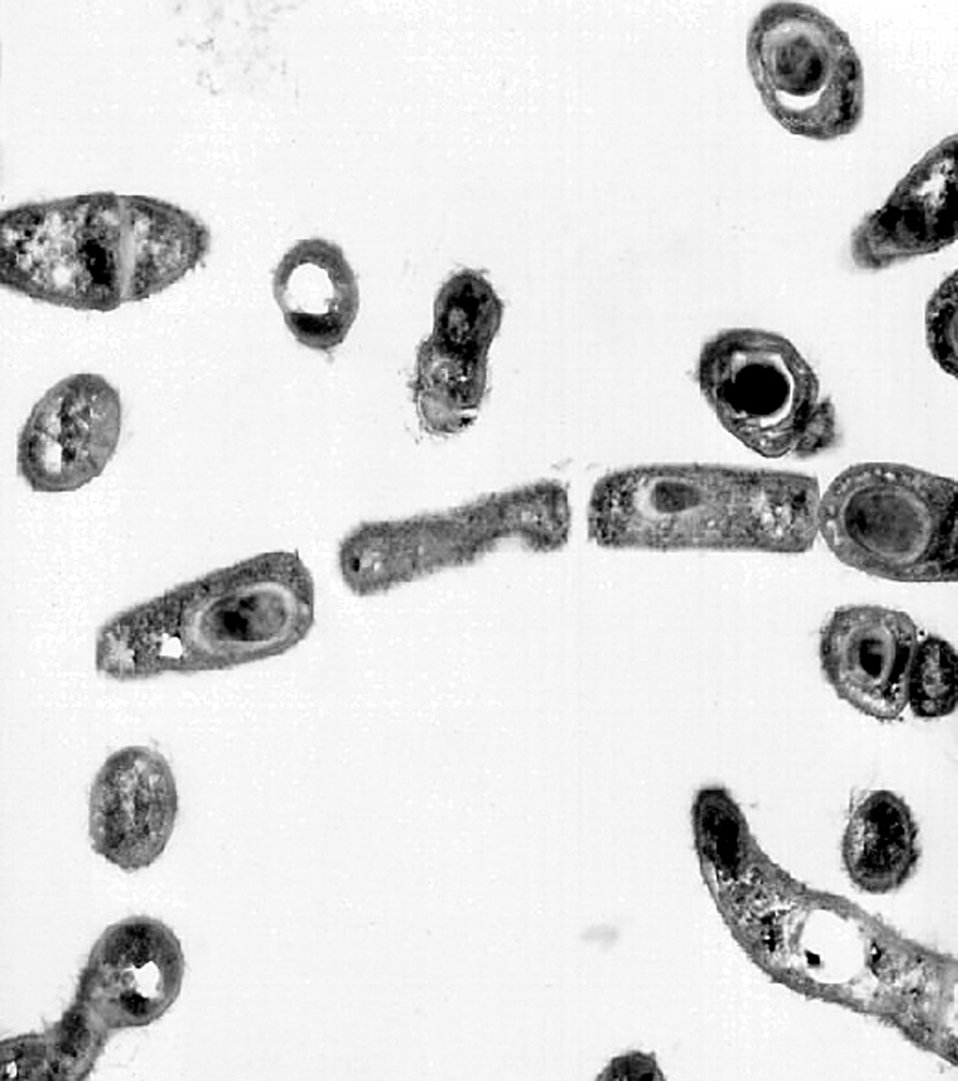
Transmission electron micrograph of Bacillus anthracis.